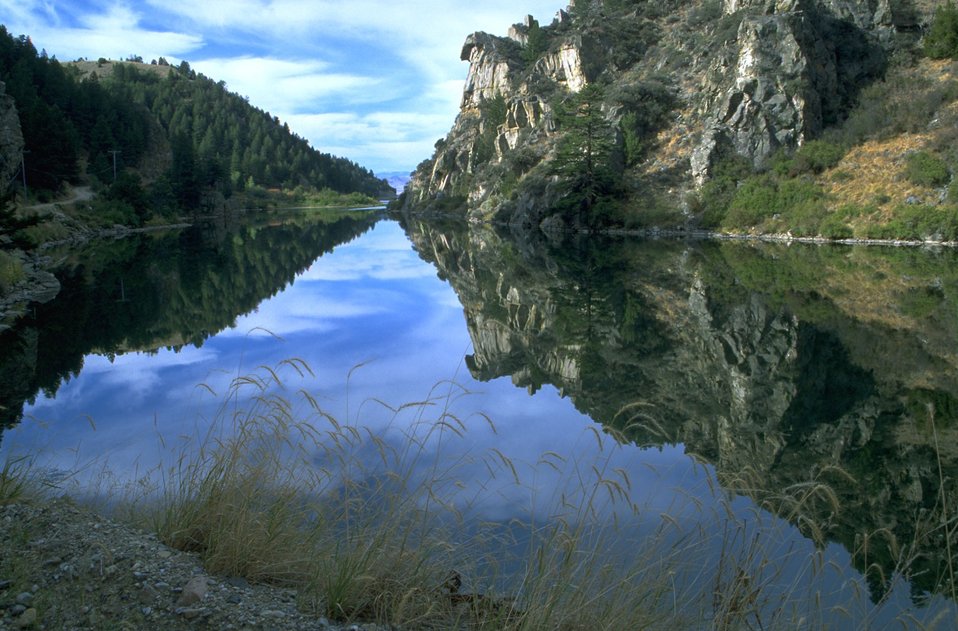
Reflection from Trail Creek on the Madison River